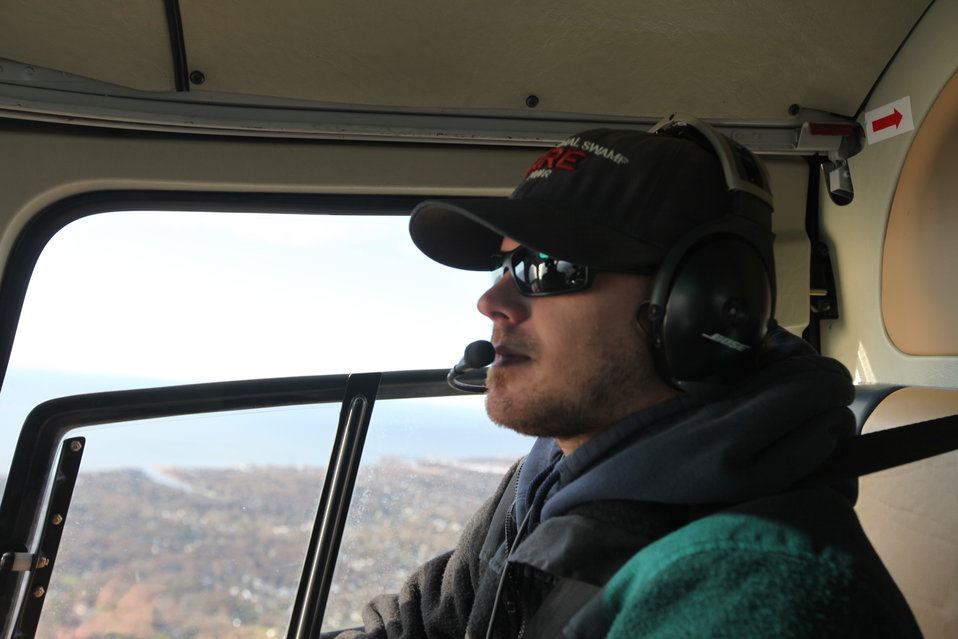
U.S. Fish & Wildlife Service Helicopter Manager Kyle Krzywicki

U.S. Fish and Wildlife Service Helicopter Manager Kyle Krzywicki in flight above Long Island, NY during an aerial survey of damage caused by Storm Sandy.